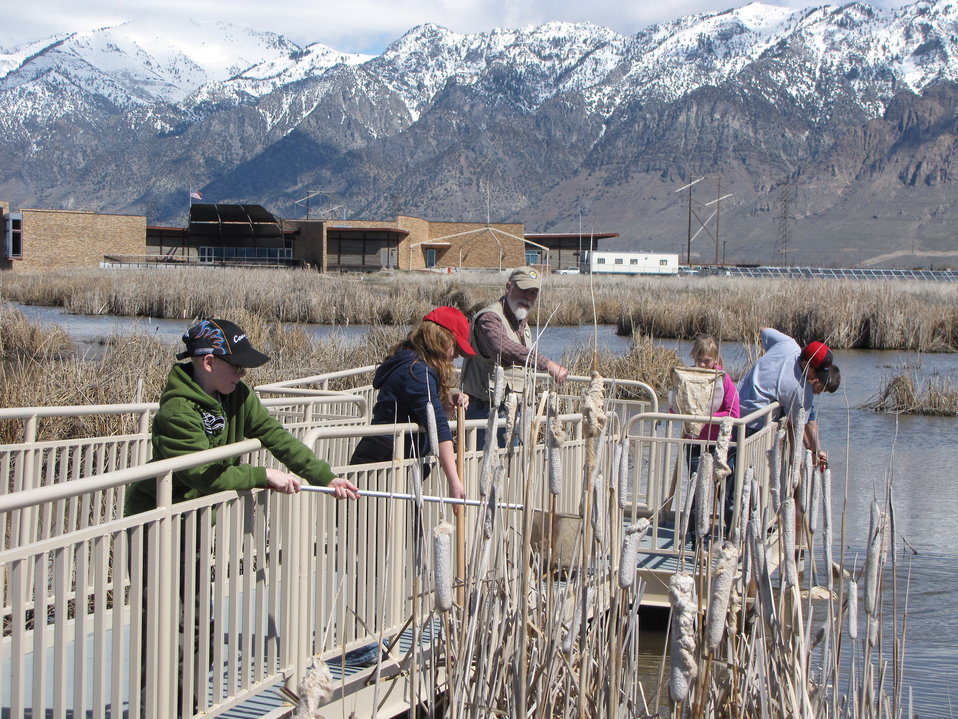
Water and Bug Sampling

Volunteer Larry helps students - learning about aquatic macroinvertabrates - to sample the water column. The kids get to sort and identify the bugs and learn and the water quality in the Bear River Migratory Bird Refuge wetlands.

Photo A. Martin / USFWS